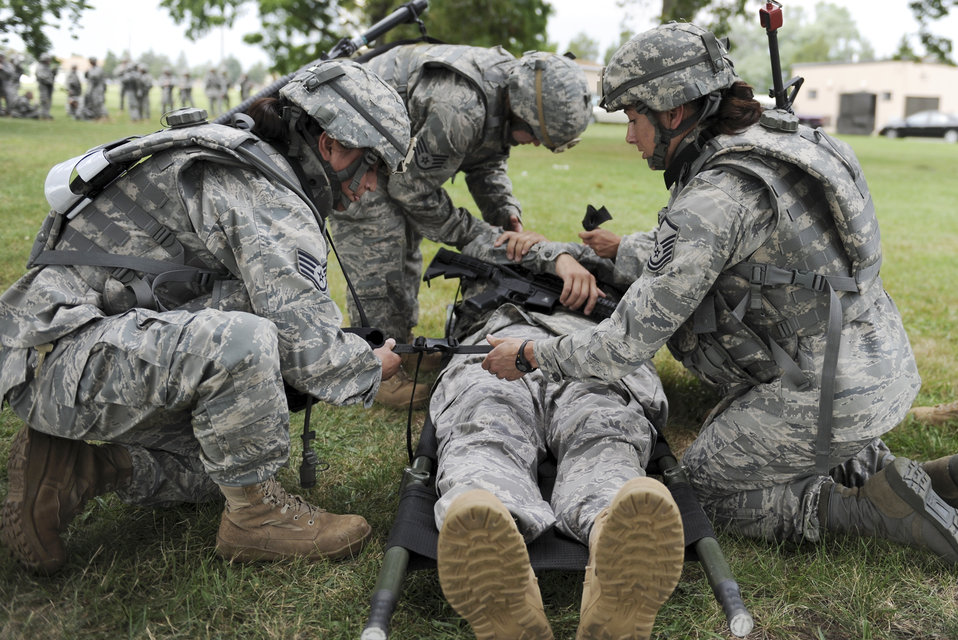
Airmen prepare for deployment

Master Sgt. Sarah Webb (right) assists Staff Sgt. Alondra Bayless to transport a